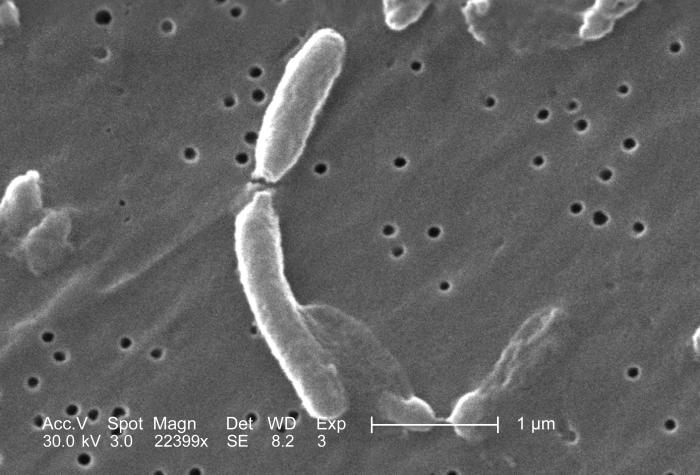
This scanning electron micrograph (SEM) depicted two Vibrio cholerae bacteria of the serogroup 01, which had been photographed as they were about to separate after having undergone cellular division; Magnified 22399x.